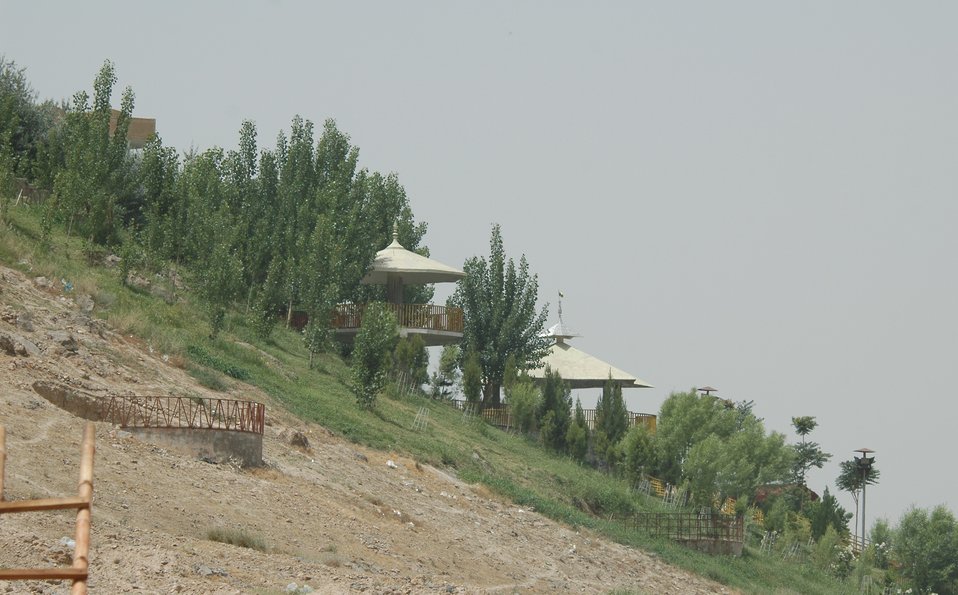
CODEL Berman